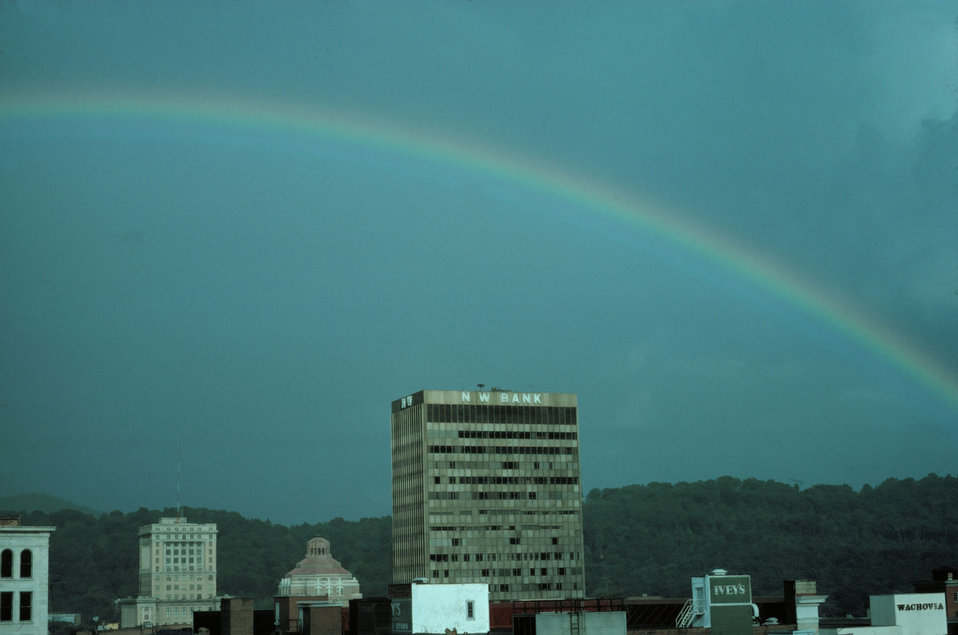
Right half of rainbow